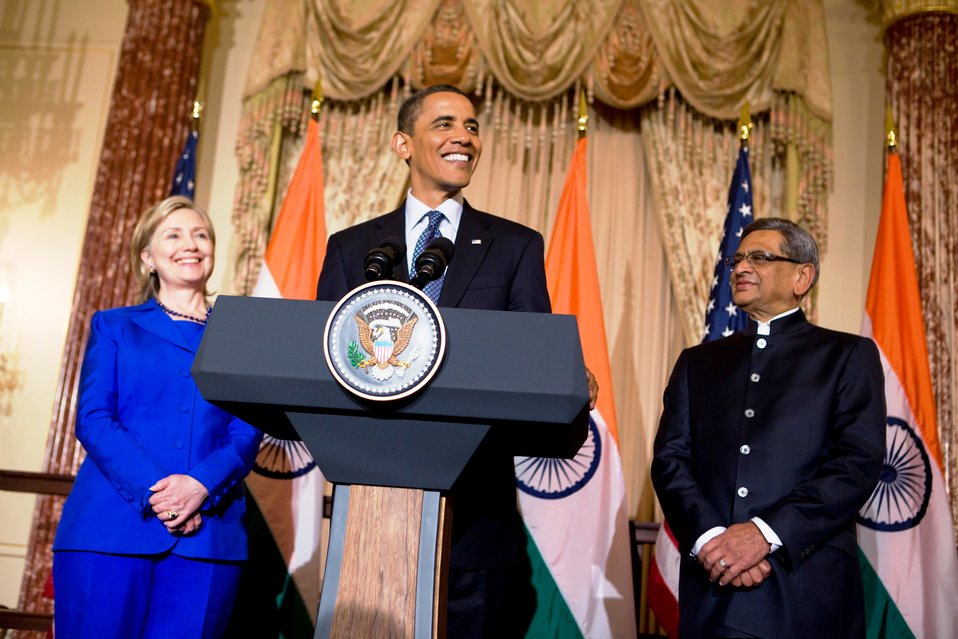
President Obama Delivers Remarks

U.S. President Barack Obama delivers remarks with U.S. Secretary of State Hillary Rodham Clinton (left) and Indian Minister of External Affairs S.M. Krishna (right) at the U.S.-India Strategic Dialogue reception at the U.S. Department of State in Washington, D.C., on June 3, 2010.